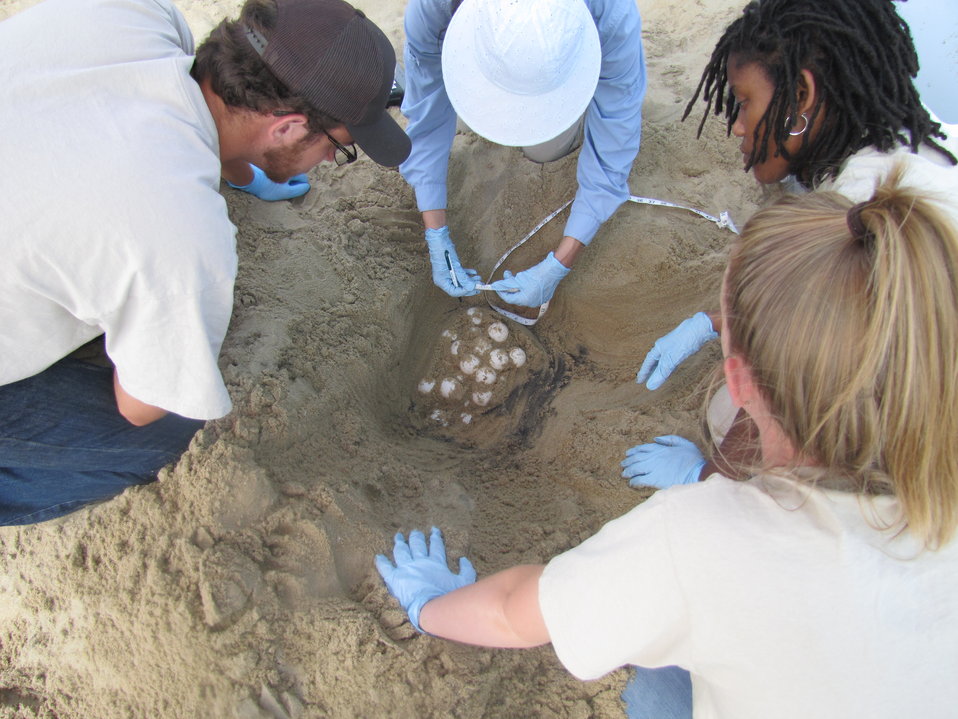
CDIP Summer Employees learn how to take measurements

Sea turtle eggs being relocated at Virginia Beach, VA.

Credit: USFWS
Crawl 2, Nest 2